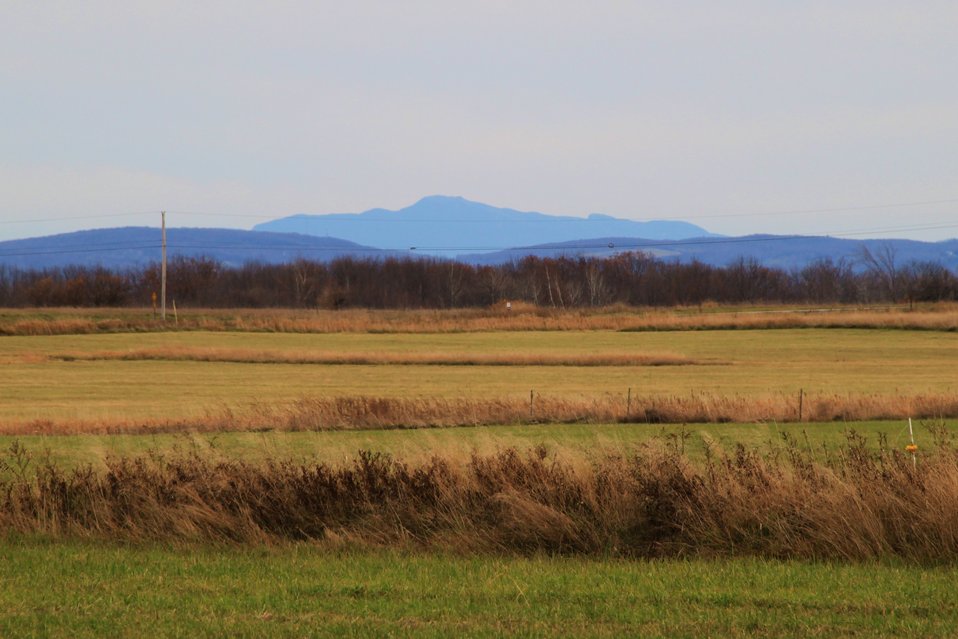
Mount Mansfield and Missisquoi National Wildlife Refuge grassland

View of Mt. Mansfield, Vermont's tallest mountain as seen from the grassland management unit of Missisquoi National Wildlife Refuge.